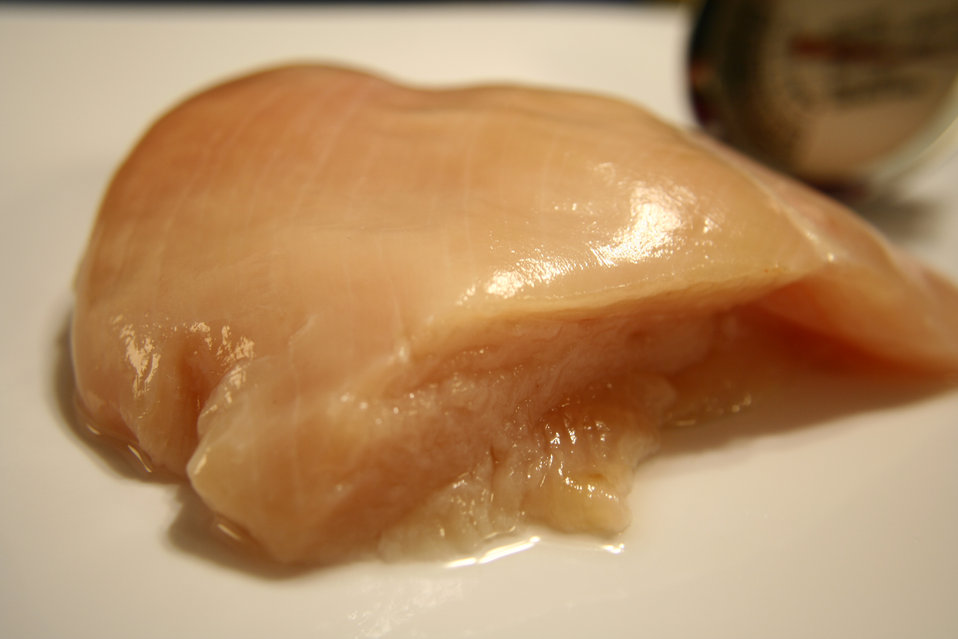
Taken in a home kitchen setting, this photograph depicts a skinned and boneless piece of chicken breast meat set atop a clean, white cutting board. In the far background, you'll note a cooking thermometer, which can be used in order to determine the interior cooking temperature of foods such as this chicken breast. The cooking temperature reached inside the meat needs to be sufficient enough to kill any pathogenic organisms including salmonella.